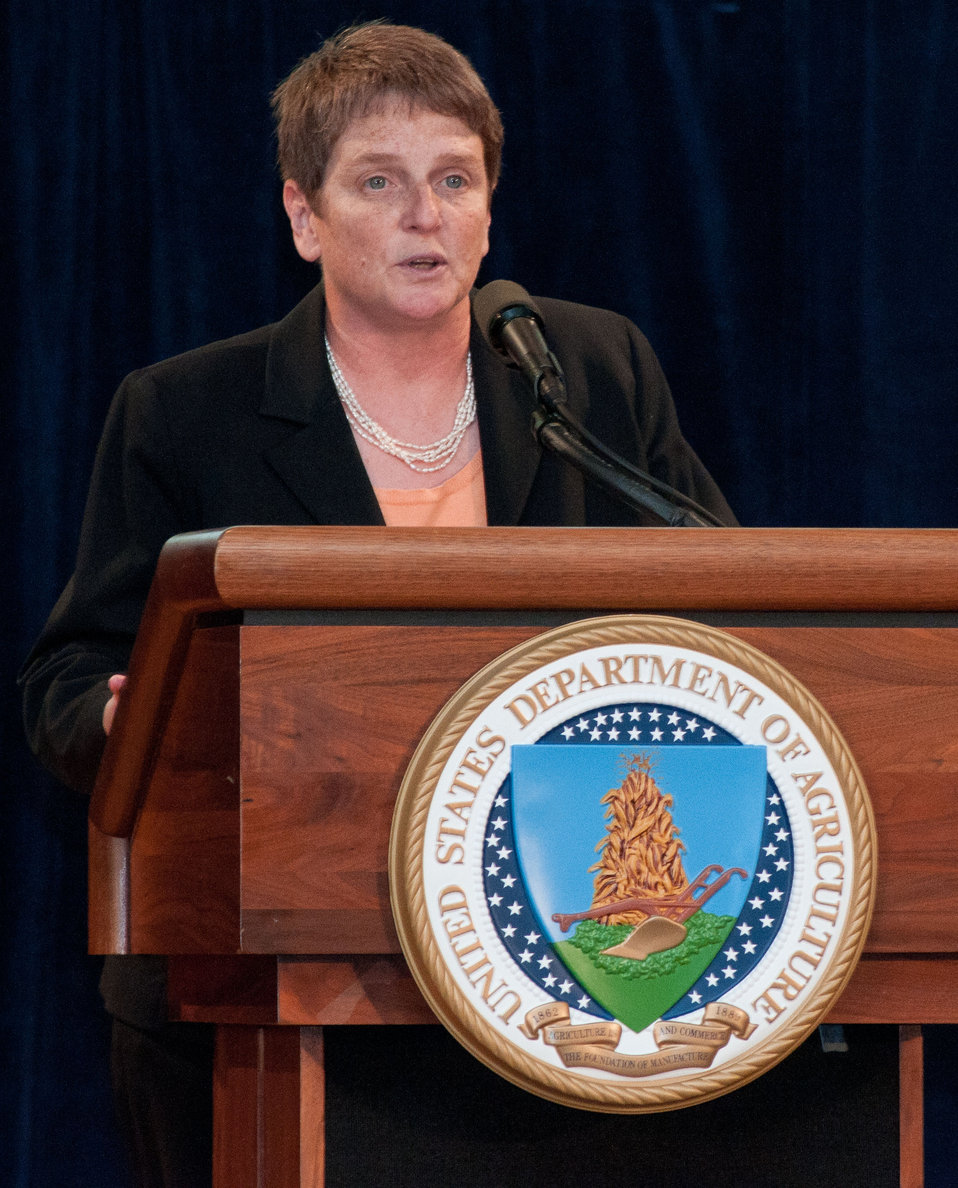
U.S. Department of Agriculture (USDA) Deputy Assistant Secretary for Administration Robin Heard introduced Agriculture Secretary Tom Vilsack during the Lesbian, Gay, Bisexual and Transgender (LGBT) Pride Observance Program in the Jefferson Auditorium, Washington, DC, on Thursday, June 2, 2011.